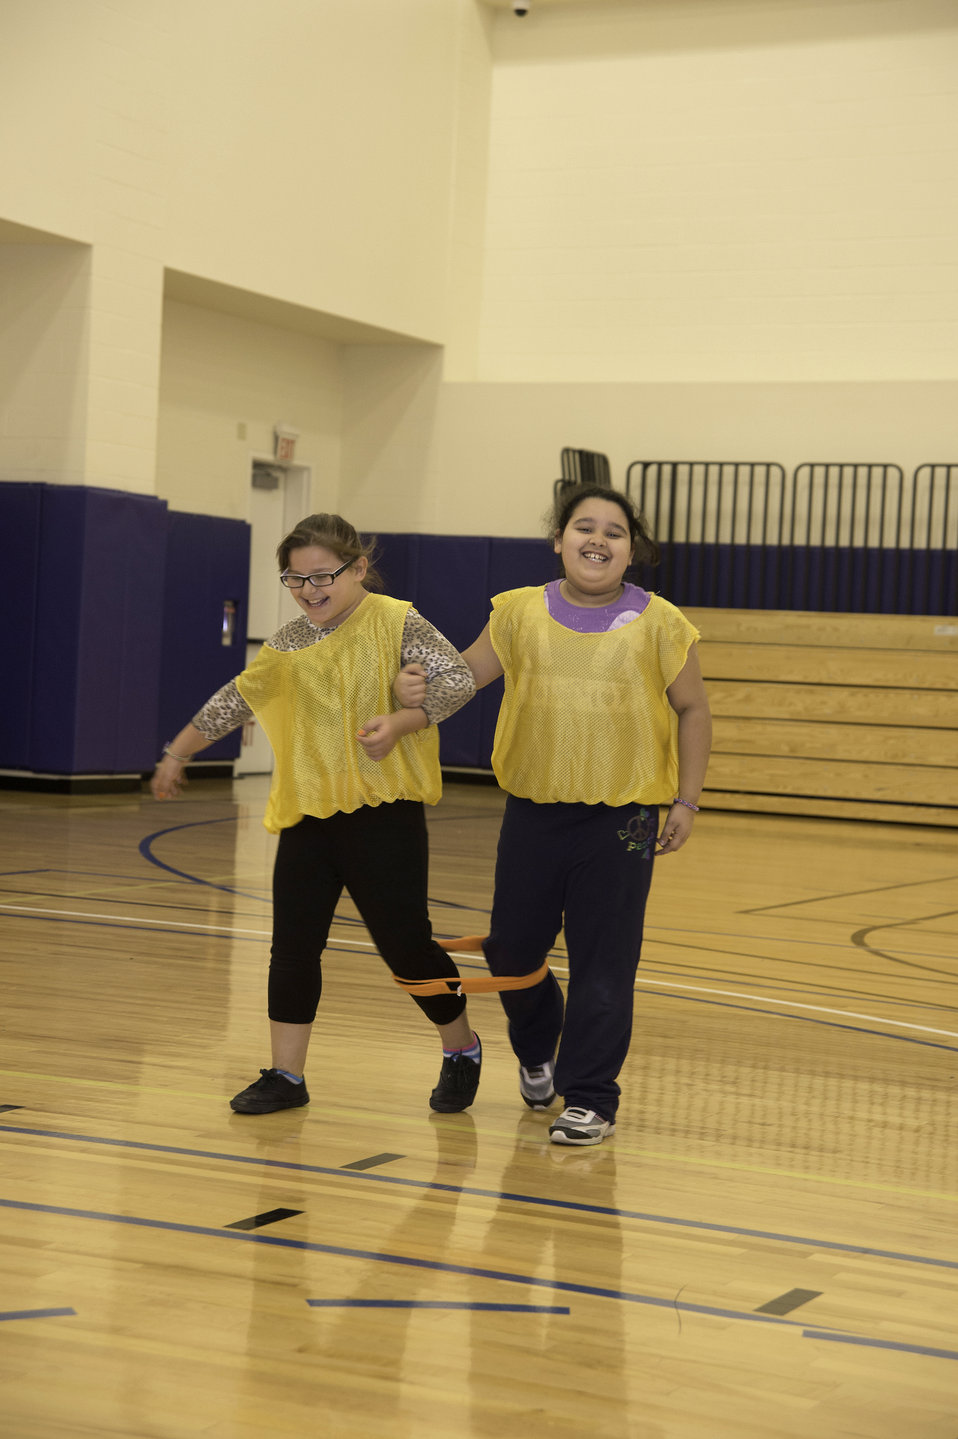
Mohegan youth enrolled in after-school program participate in physical activities at the Mohegan Tribe Community Center and Government Building in Uncasville, CT on Nov. 18, 2013. A U.S. Department of Agriculture (USDA) Rural Development (RD) Community Facility Loan was provided to the Mohegan Tribe for the construction of the Mohegan Tribe Community Center and Government Building in Uncasville, CT. USDA’s RD Community Facilities Programs makes and guarantees loans to develop essential community facilities in rural areas and towns of up to 20,000 in population. Loans and guarantees are available to public entities such as municipalities, counties, parishes, boroughs, and special-purpose districts, as well as to non-profit corporations and tribal governments. The 160,000 square foot building Center hosts an exhibit celebrating federal recognition, history of Mohegan Chiefs, a new Library and Archives space, new Arts and Crafts room, a new gymnasium, and a new community room to enjoy food and family. The Center will continue the Tribe’s plan for growth and meeting the needs of its members.